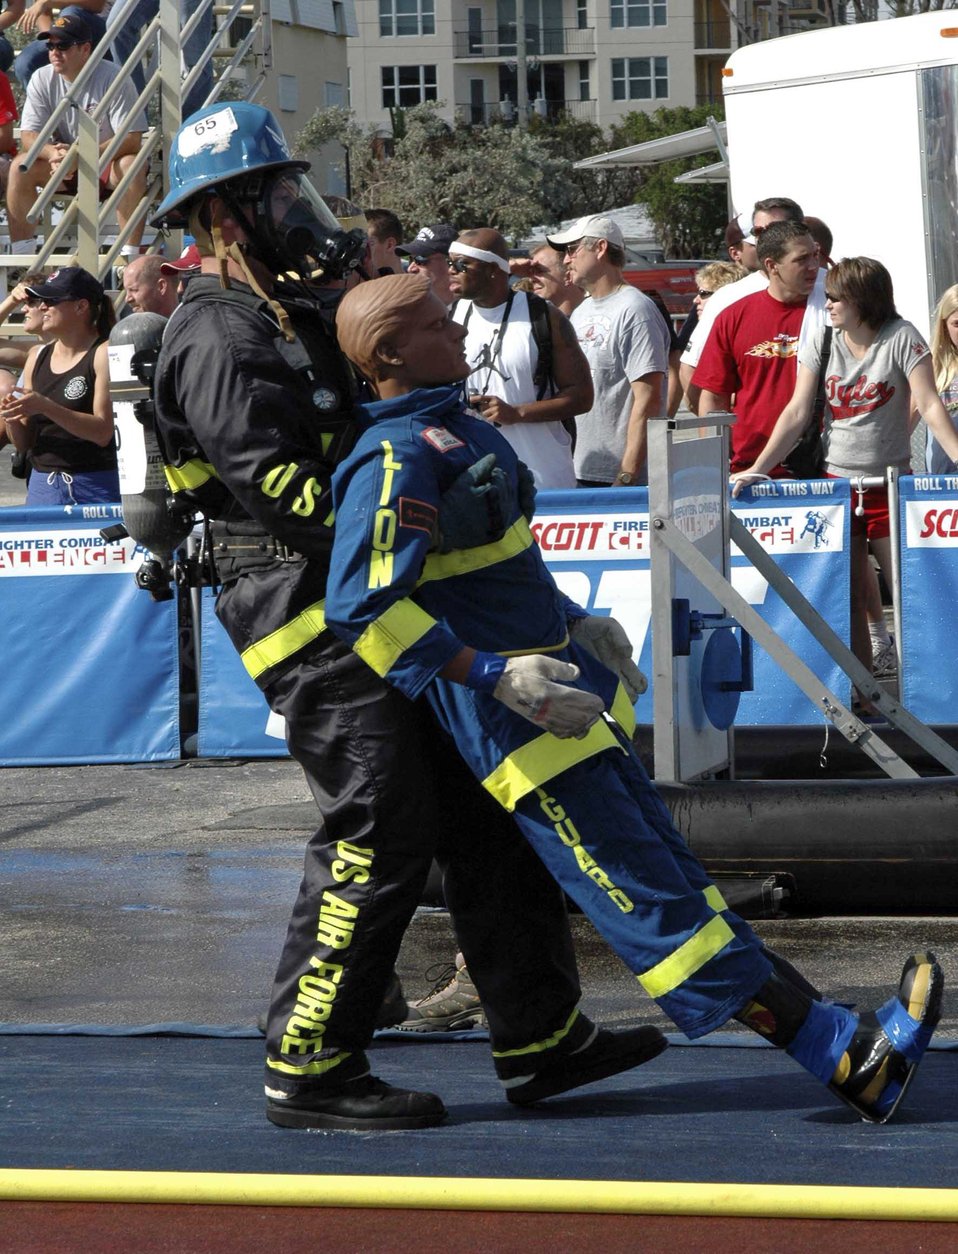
Firefighter challenge

DEERFIELD BEACH, Fla. (AFPN) -- Staff Sgt. Harry Myers competes in the victim rescue on the second day of the World Firefighter Combat Challenge. The team of firefighters from Travis Air Force Base, Calif., is trying to retain its title as world champions. Sergeant Myers is a firefighter assigned to the 60th Civil Engineer Squadron.